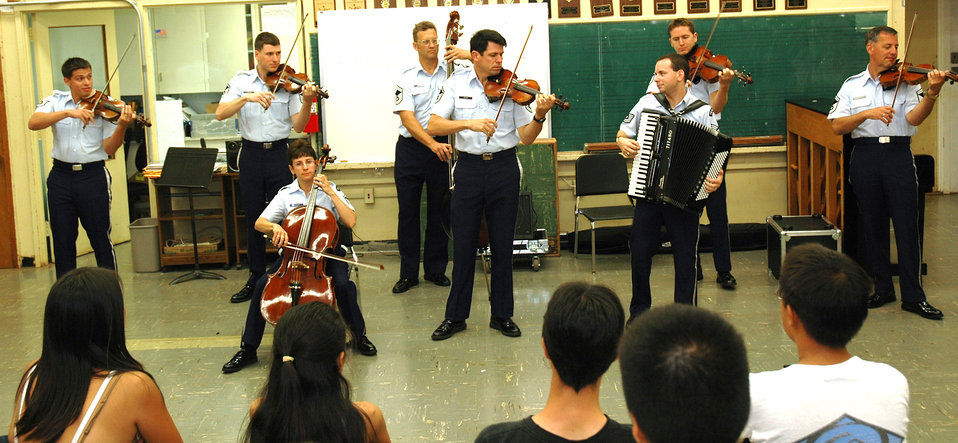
Strolling Strings awaken young minds

Members of the U.S. Air Force Strolling Strings play a mini-concert for the string orchestra class at Kalani High School in Honolulu Sept. 14 as part of the Air Force?s 60th anniversary celebration during Air Force Week there.